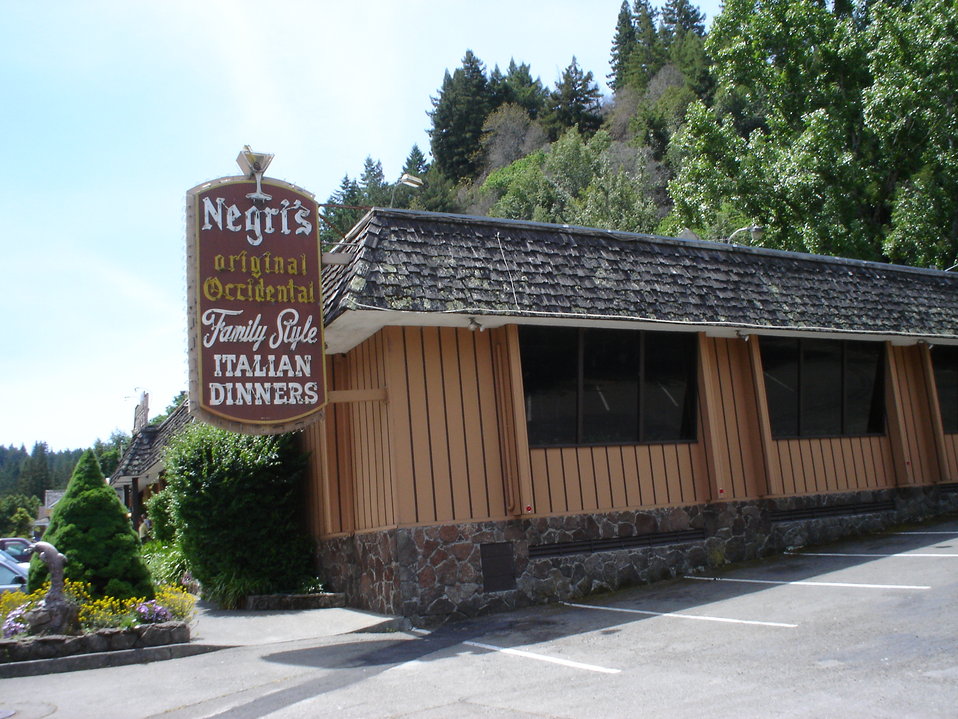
Negri's restaurant, Occidental, California